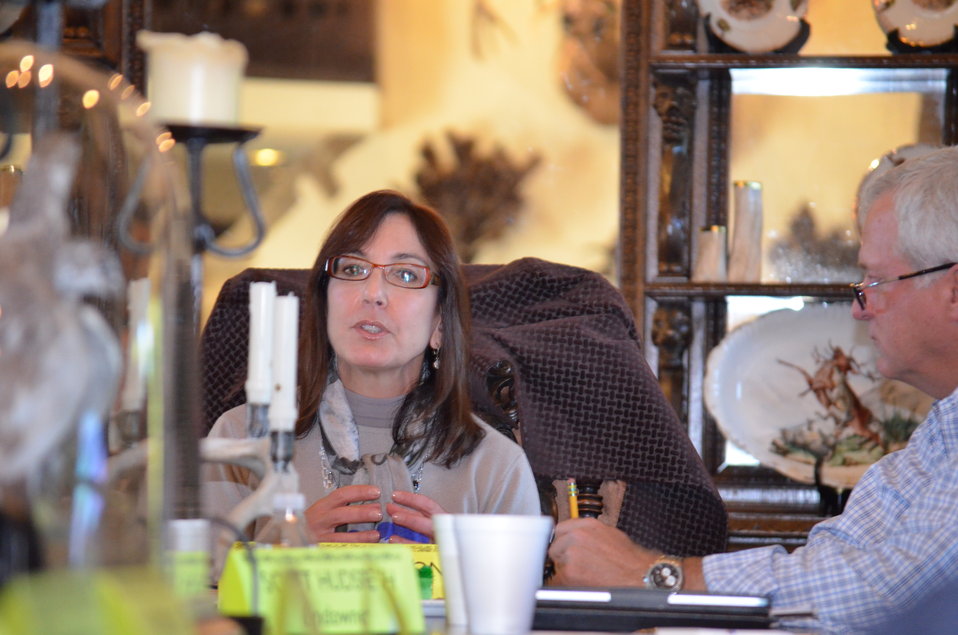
Listening in

Acting Asst. Secretary Rachel Jacobson asks private landowners about the issues impacting their conservation efforts in the confluence. USFWS/Ashley Spratt